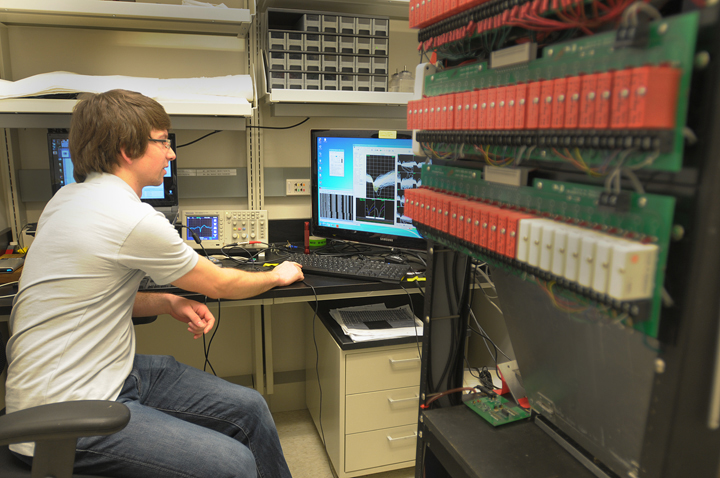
IRP Researcher

'Ben Berg, conducting a single unit recording experiment in awake, behaving rats by using a computer program to select which neurons to record from a bundle of microwires implanted in the dorsal striatum.'